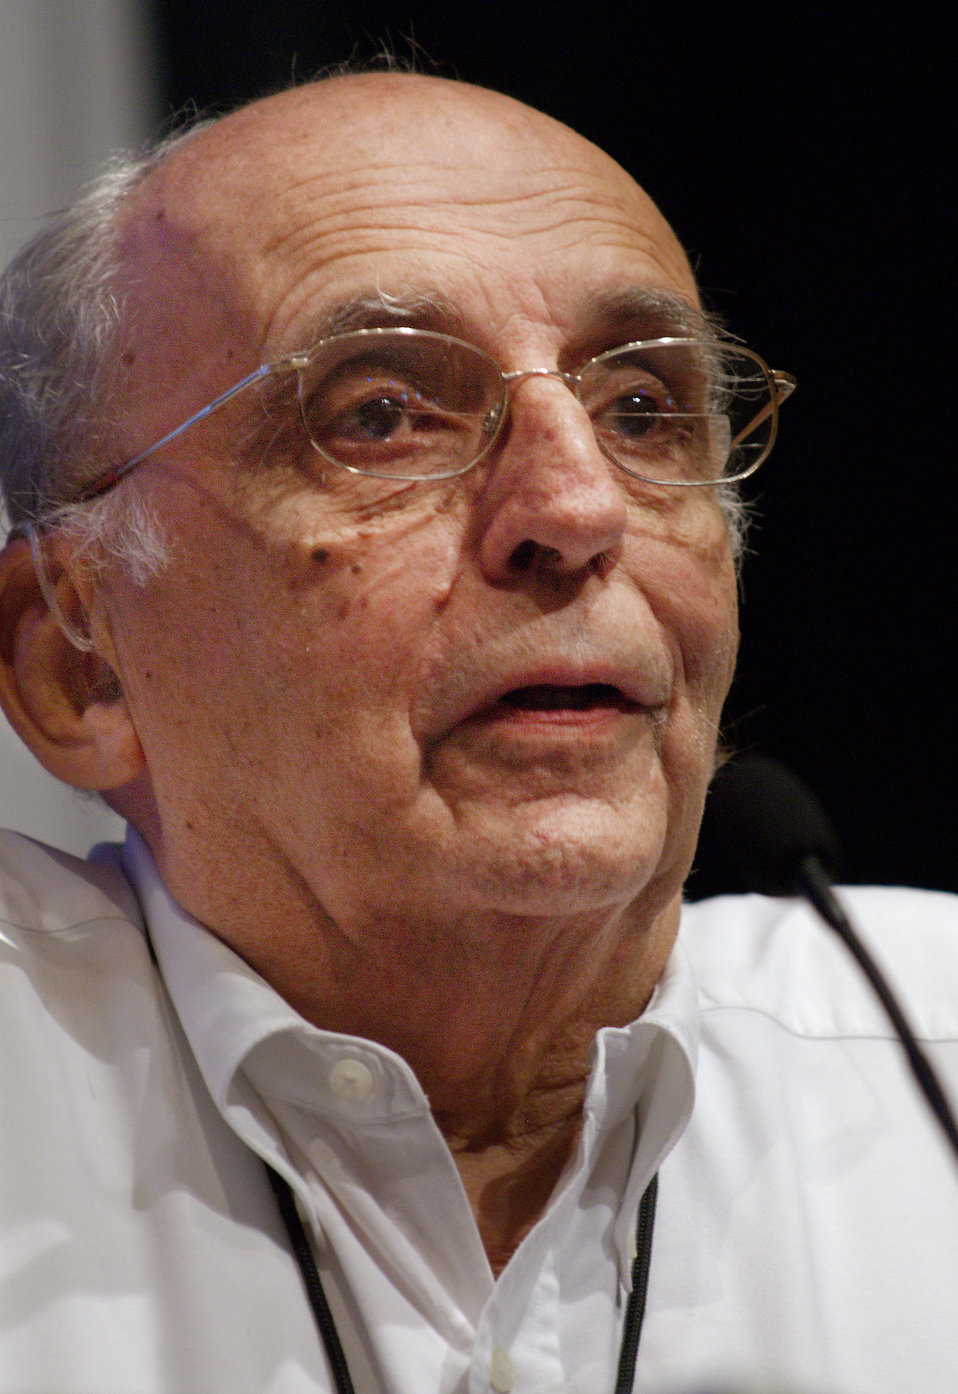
In this 2008 photograph depicted former Centers for Disease Control Director, Dr. David J. Sencer at a podium, as he was speaking during a CDC Smallpox Reunion, held in Atlanta, Georgia. It was during Dr. Sencer's watch that bold efforts to fight smallpox on a global scale, lead to its official Worldwide eradication in 1980.